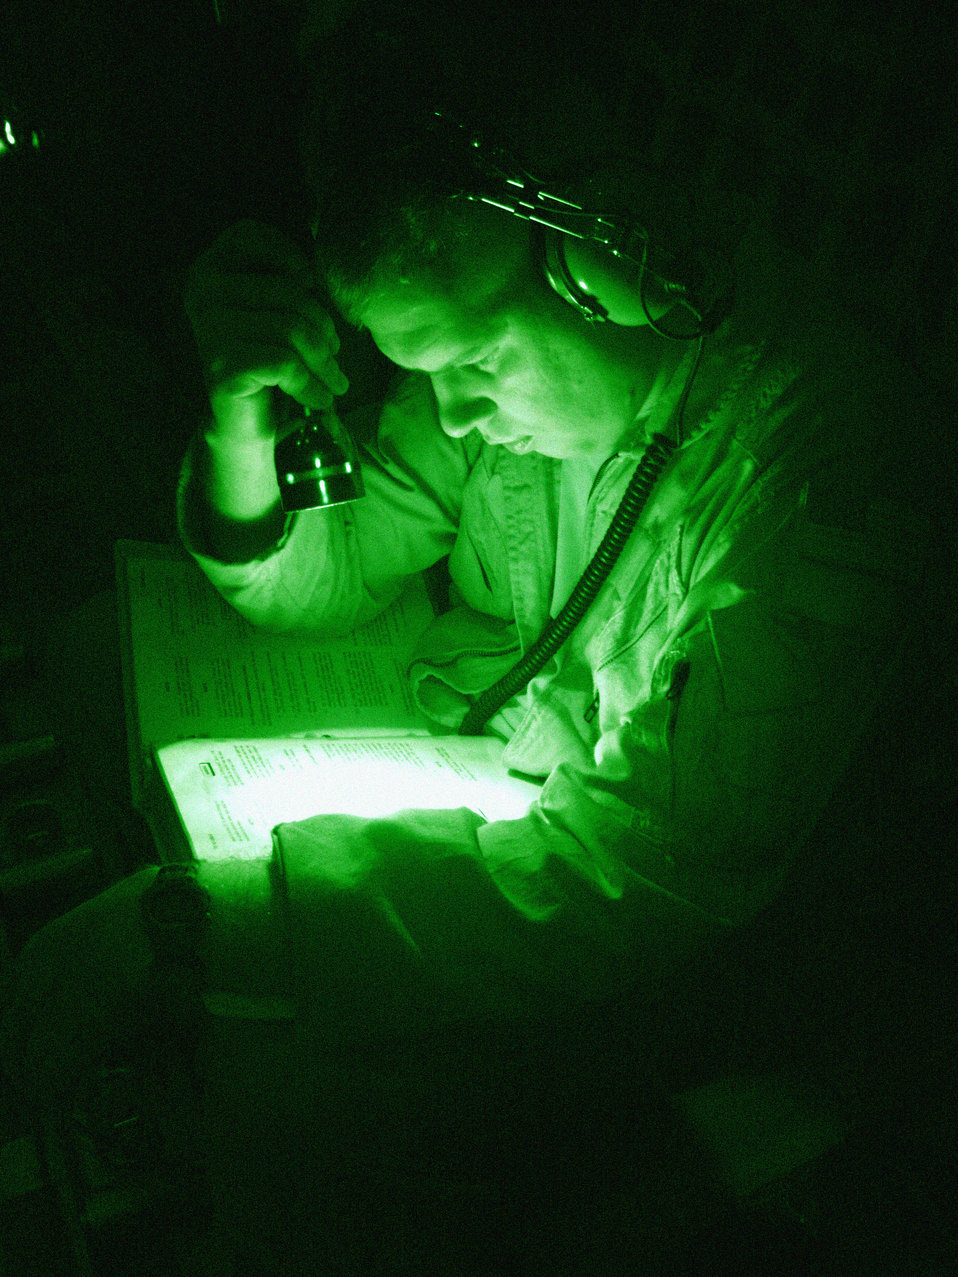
Hercules supply mission

SOUTHWEST ASIA -- Staff Sgt. John Brockman reviews airdrop procedures while onboard a C-130 Hercules en route to Kandahar Air Base, Afghanistan, to pick up pallets containing medical supplies, food and blankets. The pallets were airdropped by a C-130 Hercules to Soldiers in rural areas of Afghanistan, and the supplies were distributed to needy villagers in the local area. Sergeant Brockman is a loadmaster with the 737th Expeditionary Airlift Squadron at a forward-deployed location and is from Pope Air Force Base, N.C.